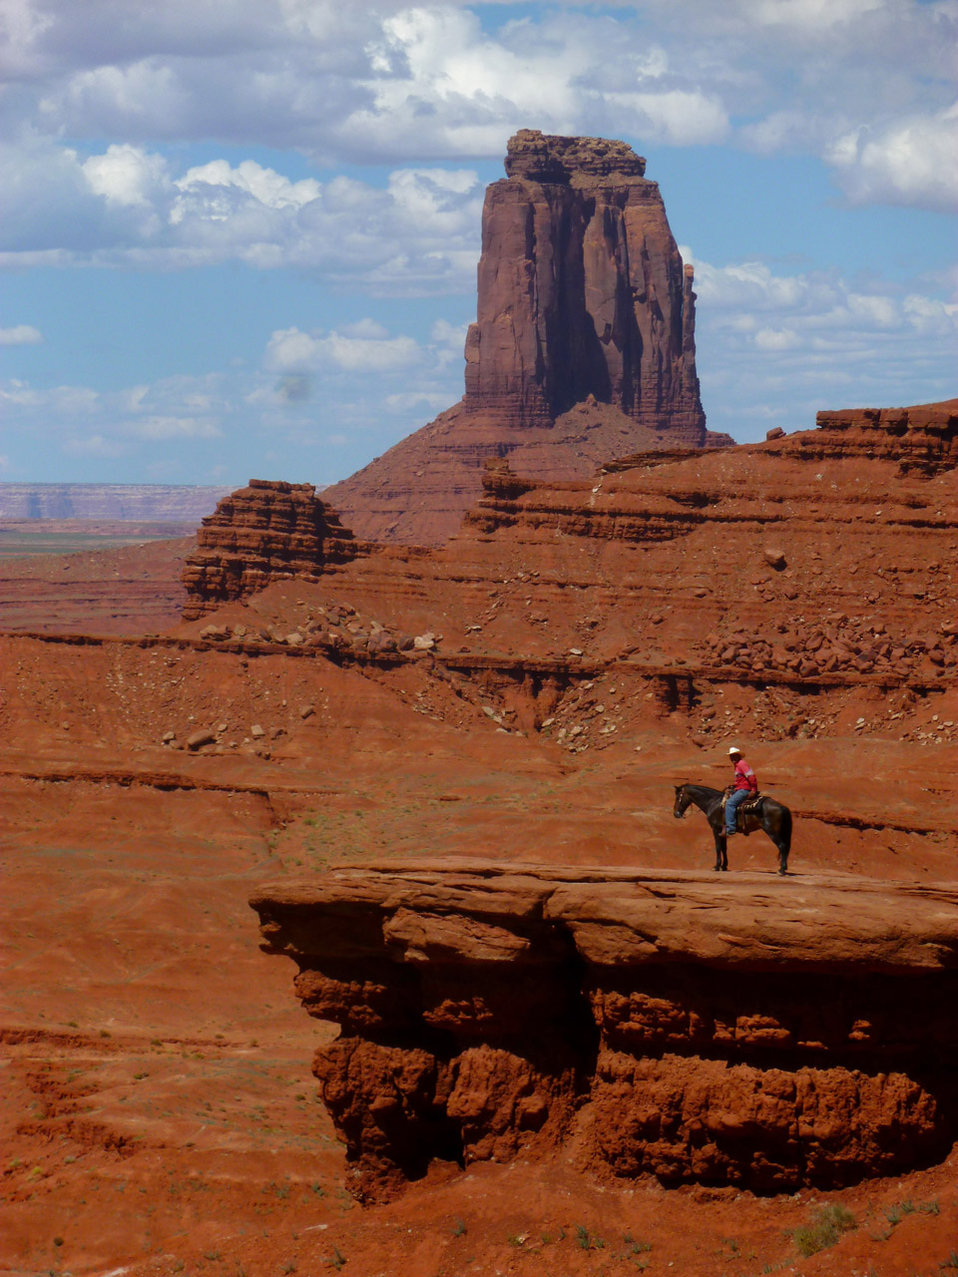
Monument valley

Indian posing in the landscape of monument valley..